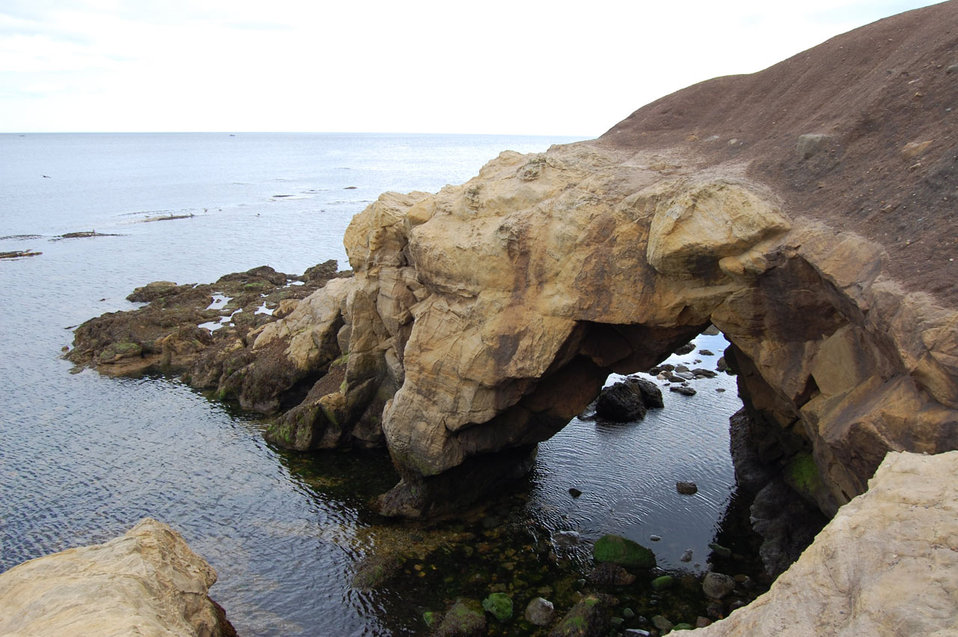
Rock in the sea

North sea coast near newcastle.